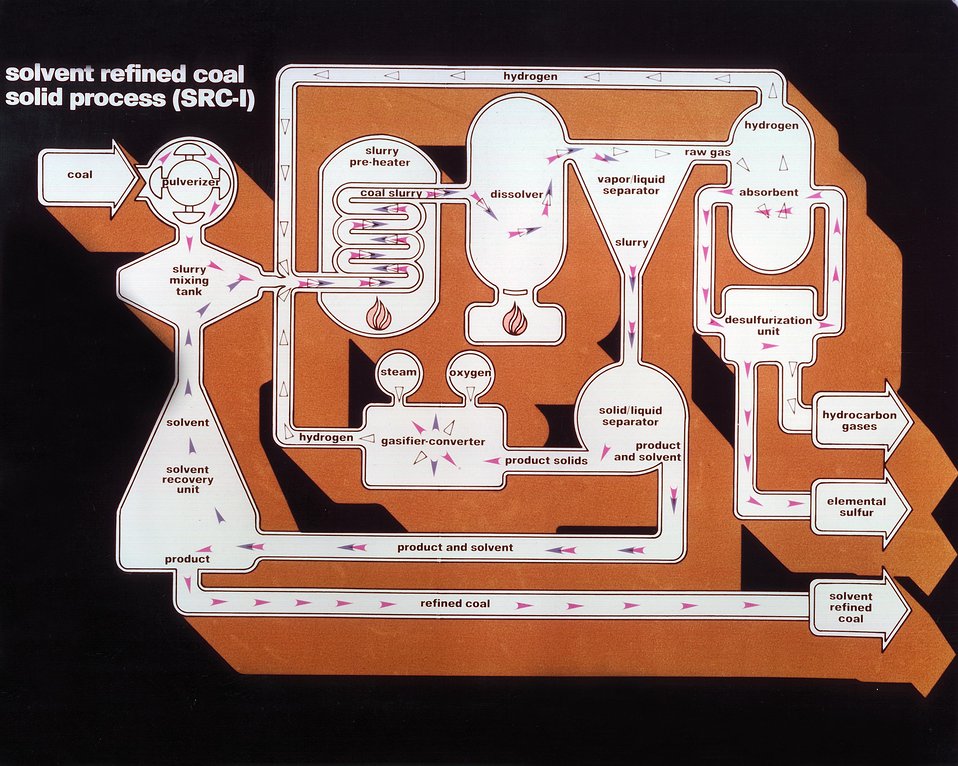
SCHEMATIC ILLUSTRATION OF THE SOLVENT REFINED COAL I (SRC-I) PROCESS.